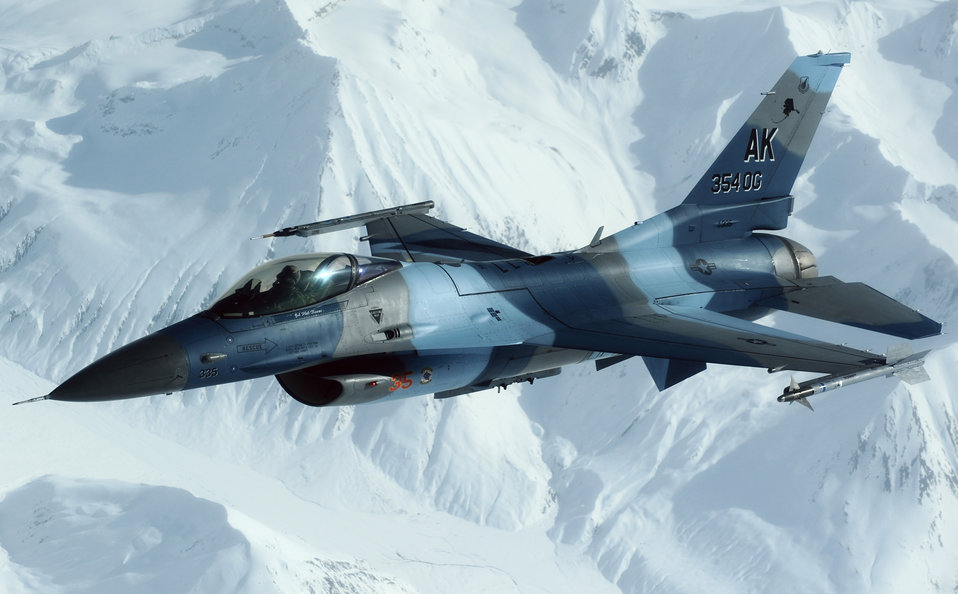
KC-10s keep Red Flag-Alaska aircraft fueled to fight

An F-16 Fighting Falcon and an aggressor disconnects from a KC-10 Extender after being refueled during Red Flag-Alaska April 22 over Alaska. The Joint Pacific Alaskan Range Complex provides 67,000 square miles of airspace, one conventional bombing range and two tactical bombing ranges containing more than 400 different types of targets and more than 30 threat simulators, both manned and unmanned. The F-16 is assigned to the 18th Aggressor Squadron from Eielson Air Force Base, Alaska.